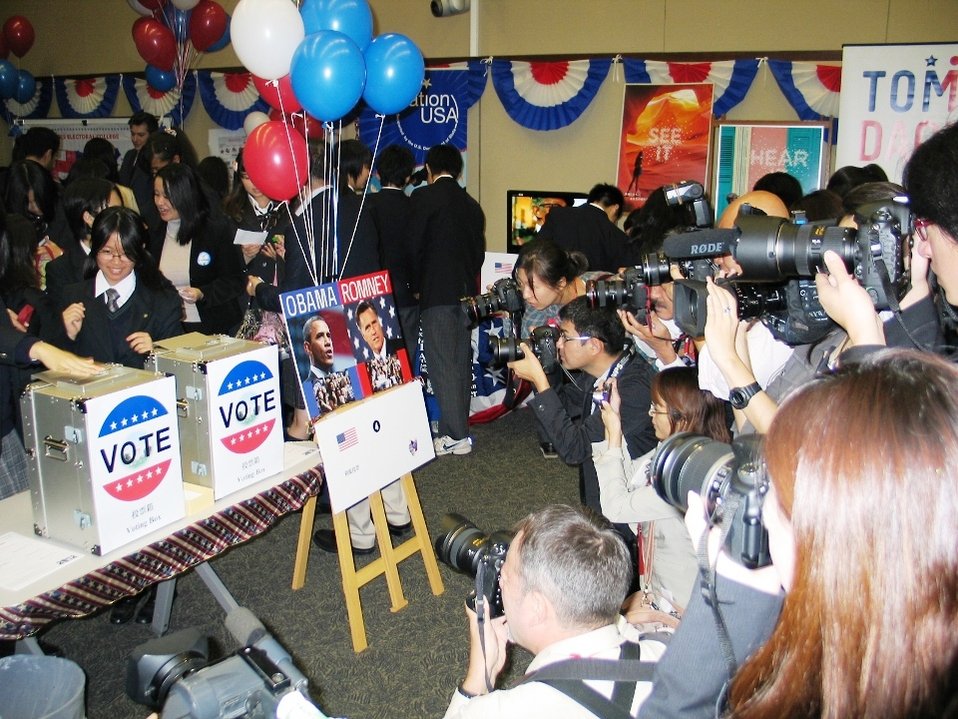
Japanese journalists take pictures of Japanese high school and college students casting their ballots at the Election 2012 event at the U.S. Embassy in Tokyo, Japan, November 7, 2012.